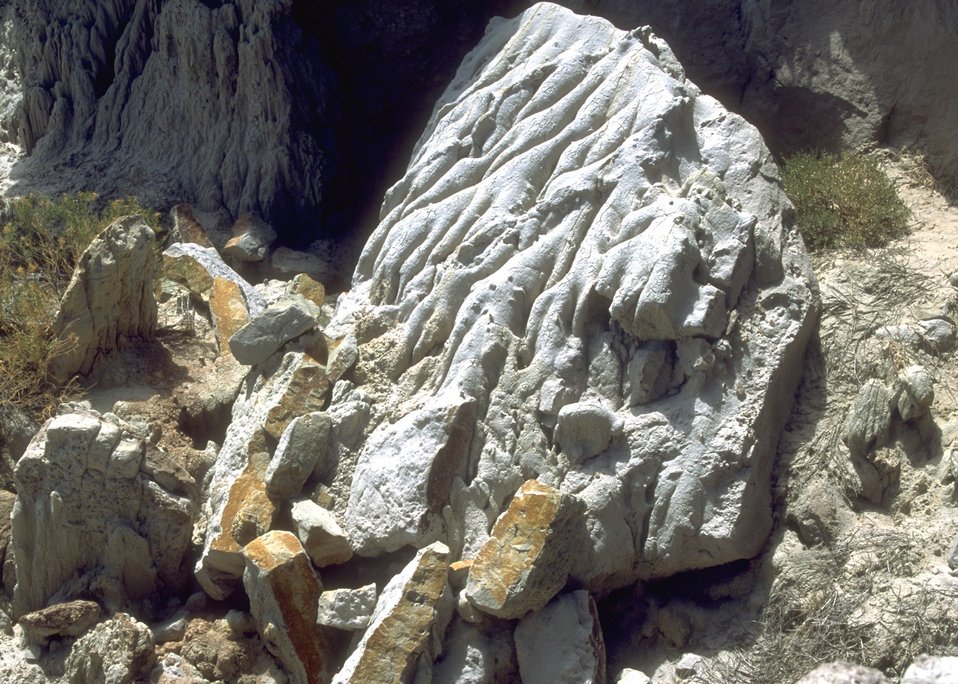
Gooseberry Interpretive Area, Worland Field Office.